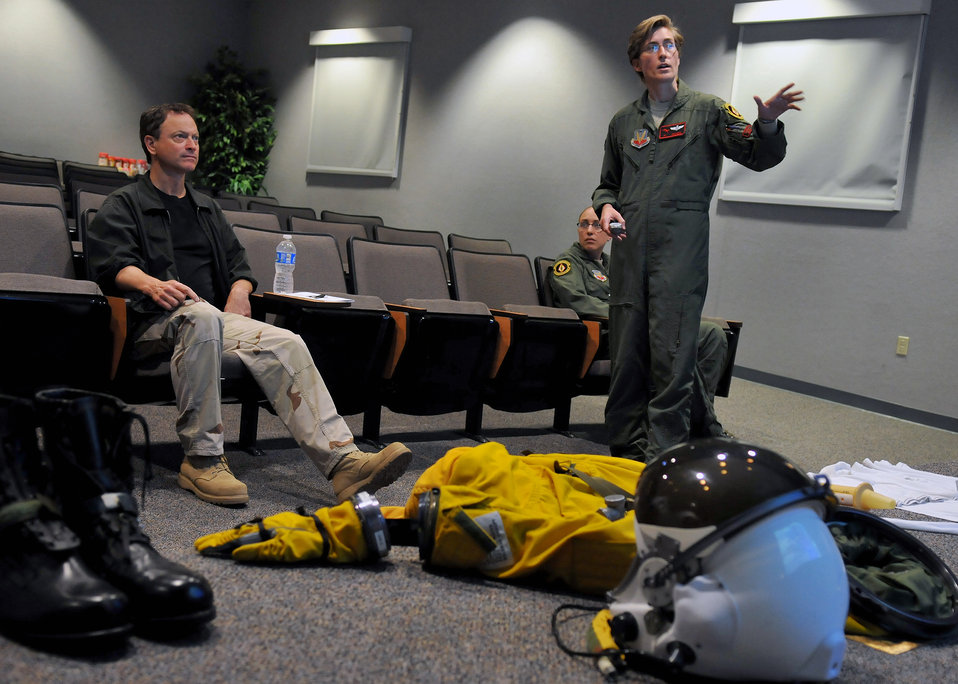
Gary Sinise receives a pre-flight briefing about the implements and functions of the U-2 Dragon Lady flight suit June 7, 2011, at Beale Air Force Base, Calif.